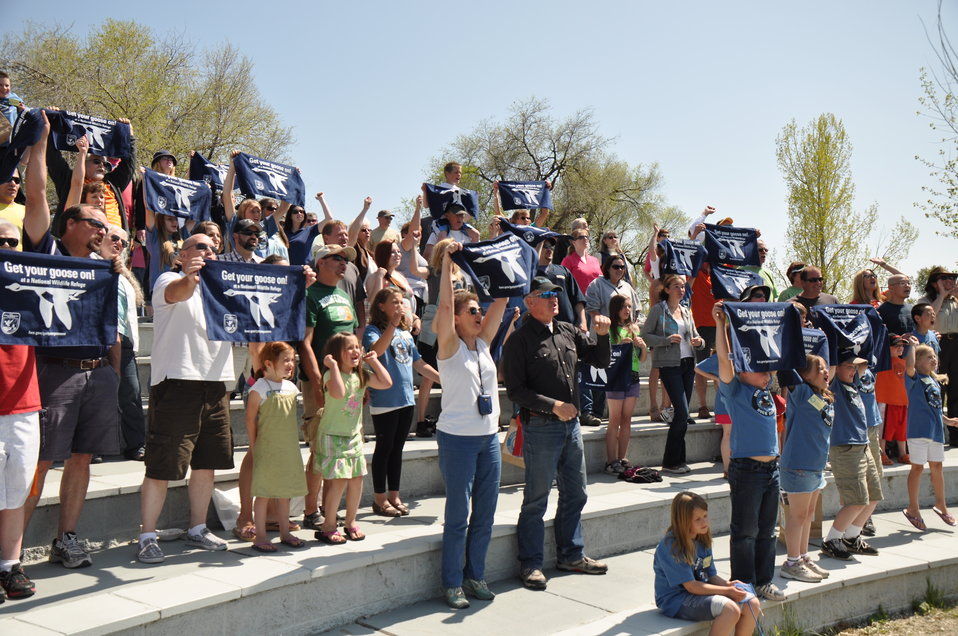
Get Your Goose On!!!

More than 100 people attended the 2012 Montana Junior Duck Stamps award ceremony. The folks pictured here posed with their towels as a videographer captured footage of them screaming, in unison, 'Get Your Goose On!'